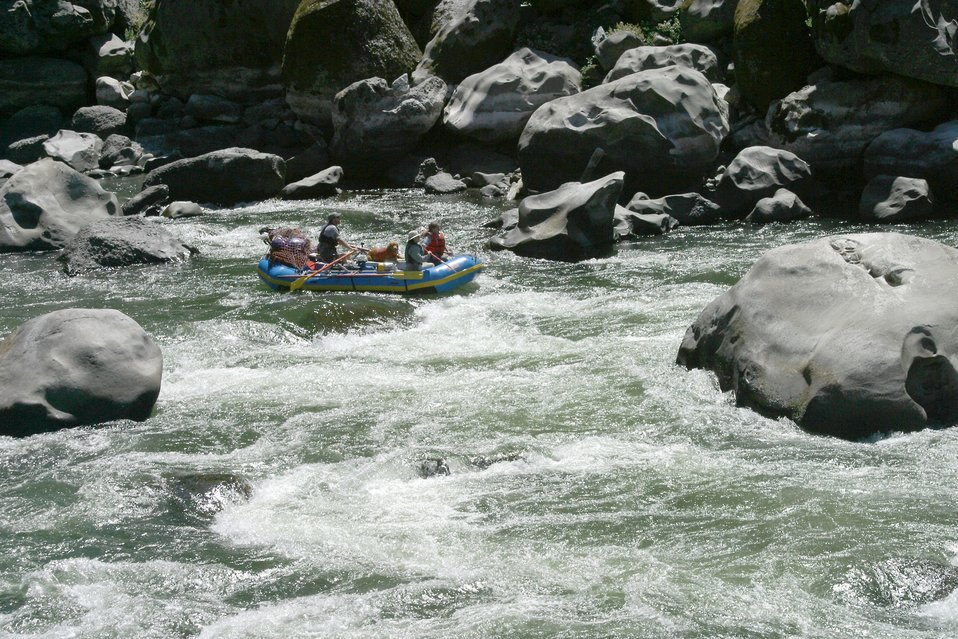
Blossom Rapids.